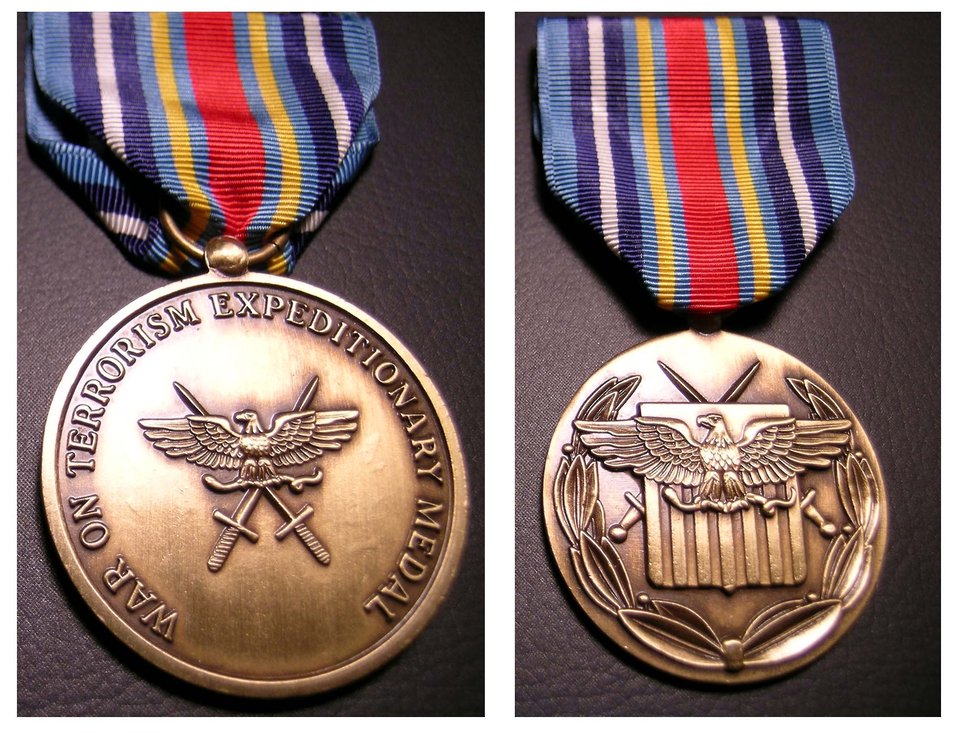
War on terrorism medals introduced

WASHINGTON -- The front of the Global War on Terrorism Expeditionary Medal features a shield adapted from the Great Seal of the United States. The back includes the eagle, serpent and swords from the medal's front-side design along with the inscription